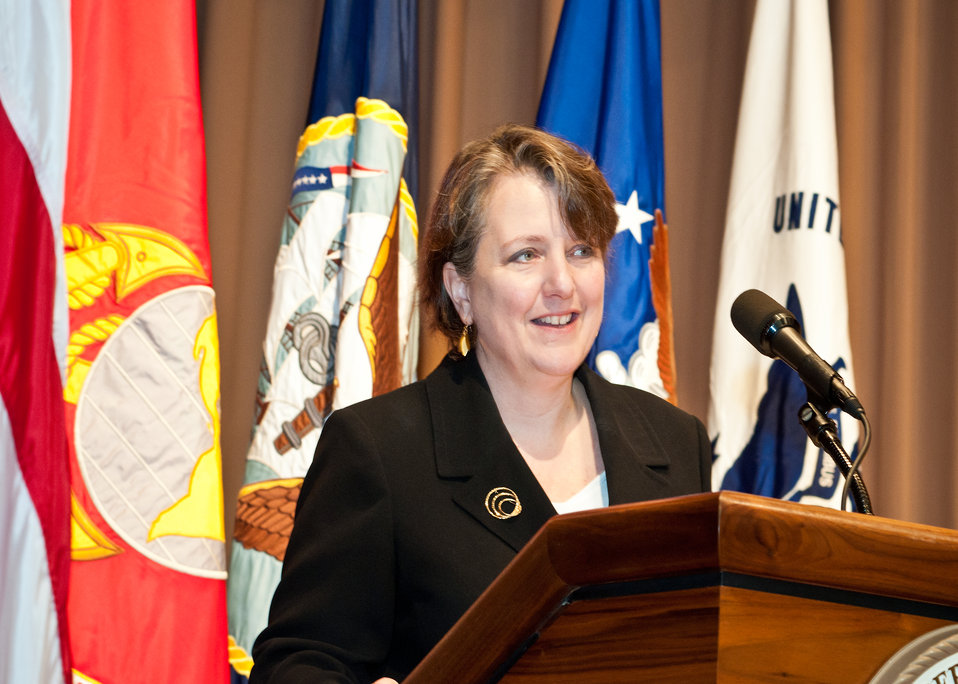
Agriculture Deputy Secretary Dr. Kathleen Merrigan, introduces Rear Admiral David Boone, Director, Shore Readiness (OPNAV N46) Deputy Chief of Naval Operations, U.S. Navy, at the United States Department of Agriculture Veteran’s Day celebration in Washington, DC, Thursday, November 10, 2011.